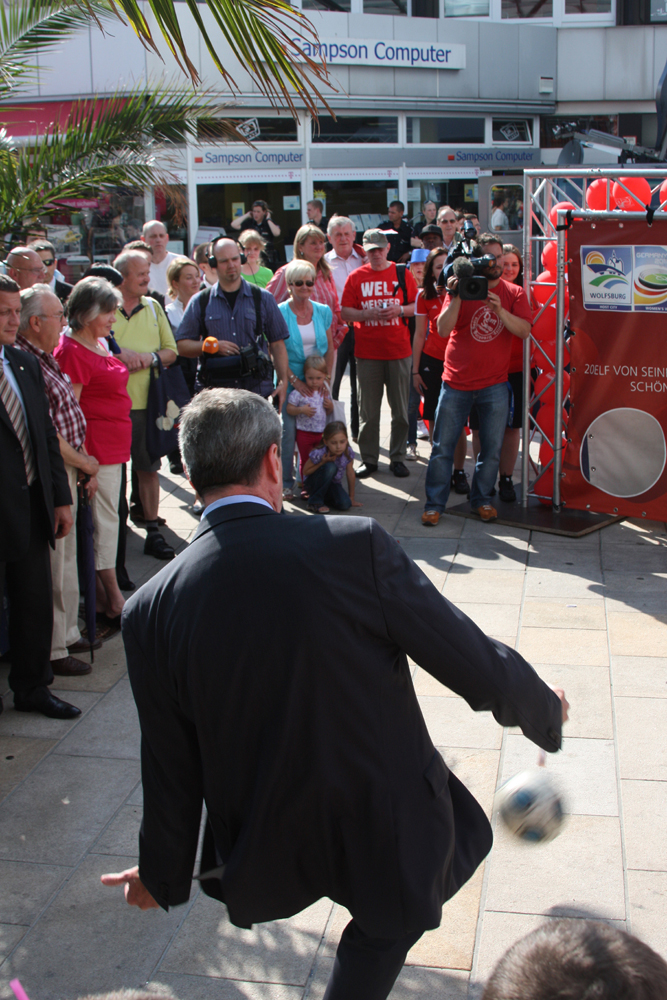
Ambassador Murphy Kicks a Soccer Ball at a Goal Wall

U.S. Ambassador to Germany Philip D. Murphy kicks a soccer ball at a goal wall in Wolfsburg, Germany, on July 6, 2011.